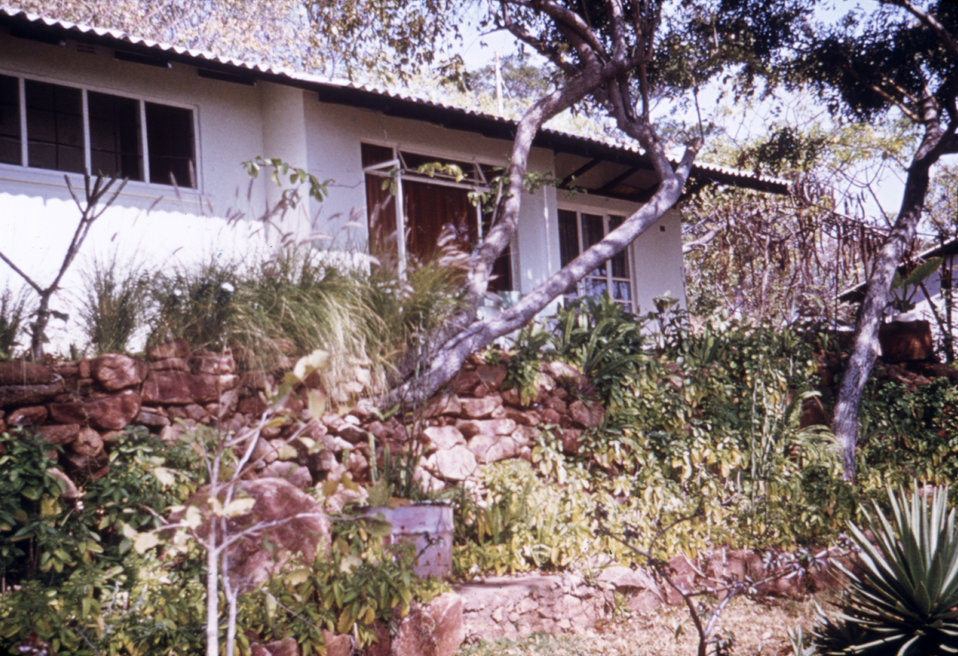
This was the outside of a house in Kariba, Rhodesia (now Kariba, Zimbabwe), one of the many sites that was investigated during the Marburg virus outbreak of 1975.